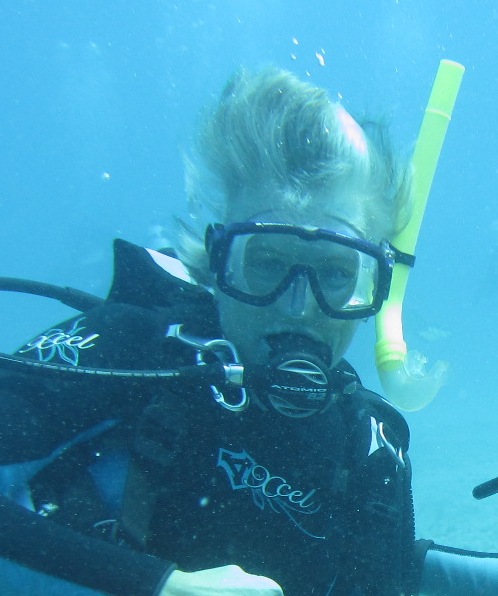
Susan White is project leader of the Pacific Reefs National Wildlife Refuge and Monuments Complex. She's diving here in the waters off O'ahu, Hawaii to meet Fish and Wildlife Service recertification requirements. In the field, she sometimes scubas or snorkels to monitor coral reef wildlife and habitat, inspect sub-surface threats or restoration projects, and conduct reef-fish surveys.